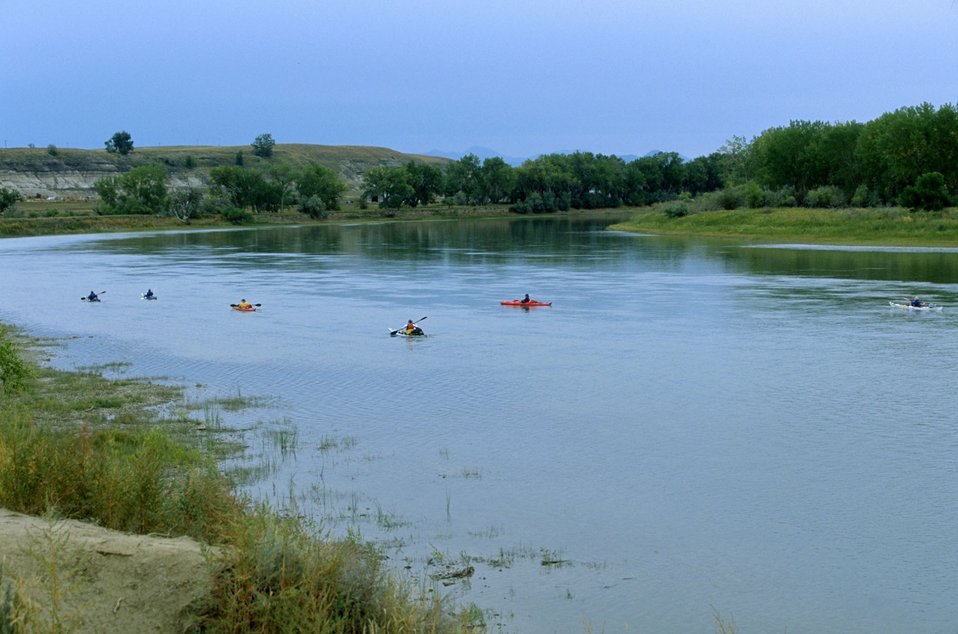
Floating the Upper Missouri River